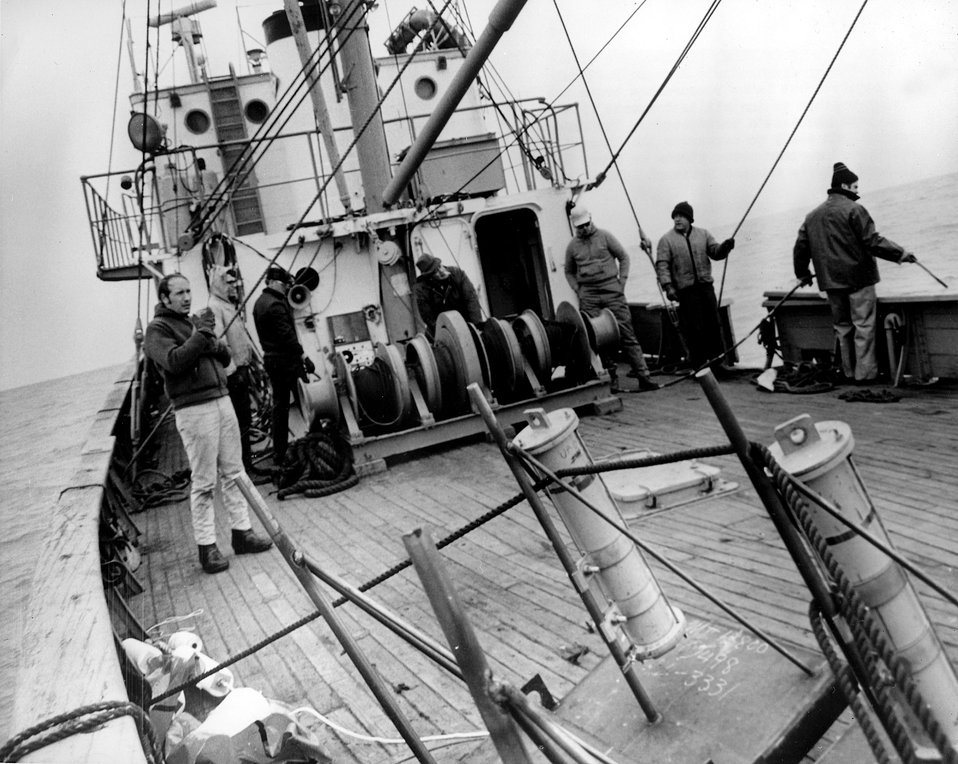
Argonne Great Lakes researchers brave the late winter weather to install instruments that will take Lake Michigan's temperature.
c.1972